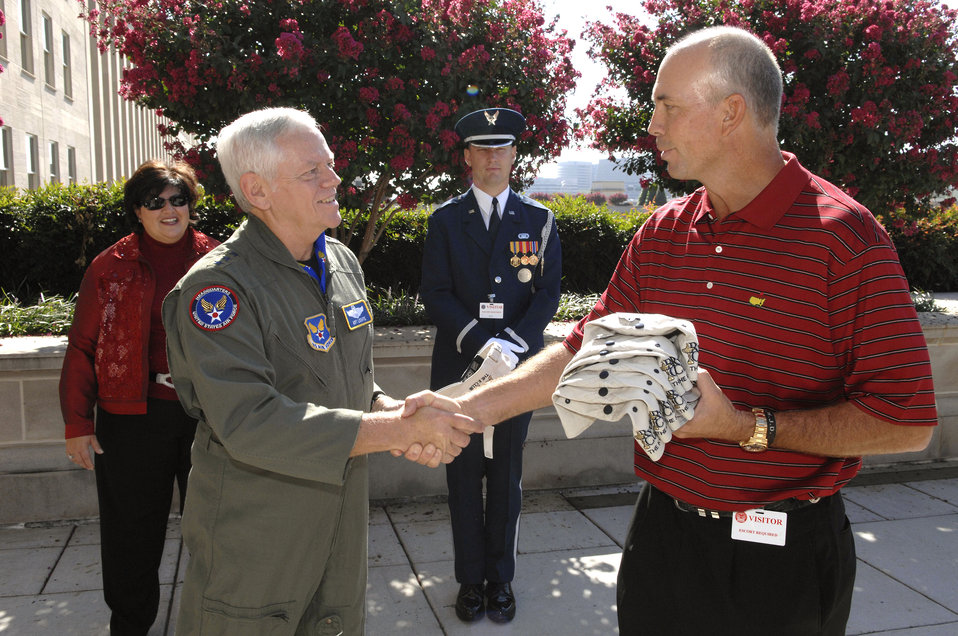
PGA champions visit Pentagon

U.S. Ryder Cup Captain Tom Lehman shakes hands with Lt. Gen. Arthur J. Lichte after the two exchanged mementos from the Ryder Cup team's visit at the Pentagon Sept. 17. The team then visited wounded servicemembers at Walter Reed Army Medical Center.